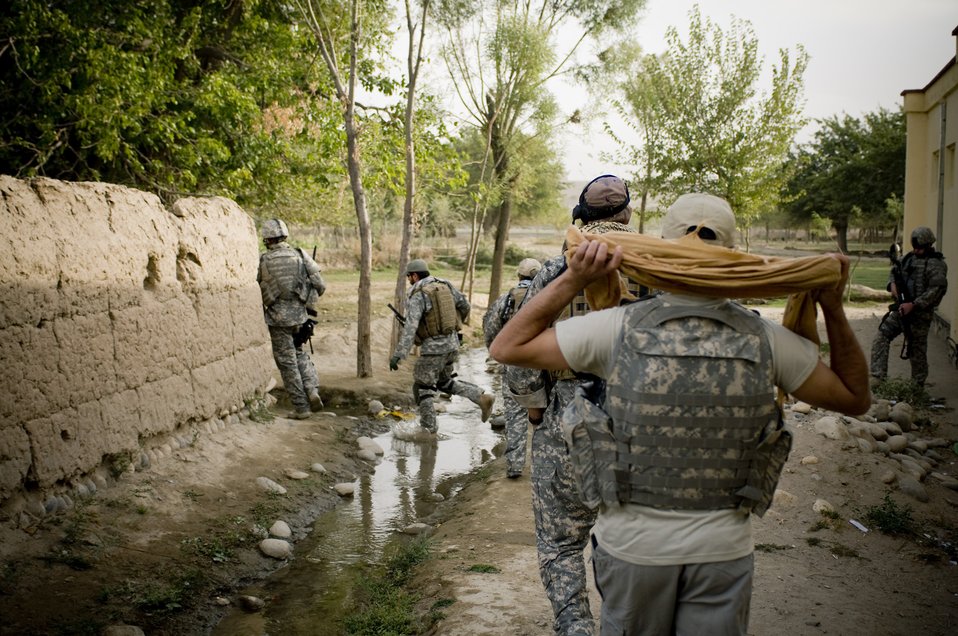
Village visit

Airmen enter an Afghan village recently. The coalition force wanted to learn more about the village and offer help to ensure the village's security.